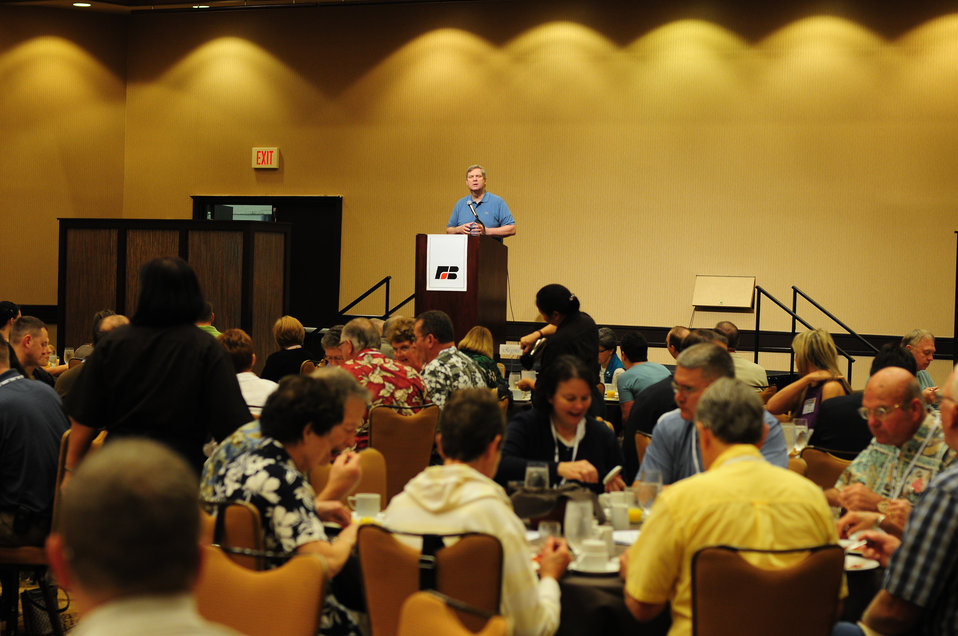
Agriculture Secretary Tom Vilsack speaks at the Iowa Farm Bureau event at the Sheridan Waikiki, in Honolulu, Hawaii, on Sunday, January 8, 2012.